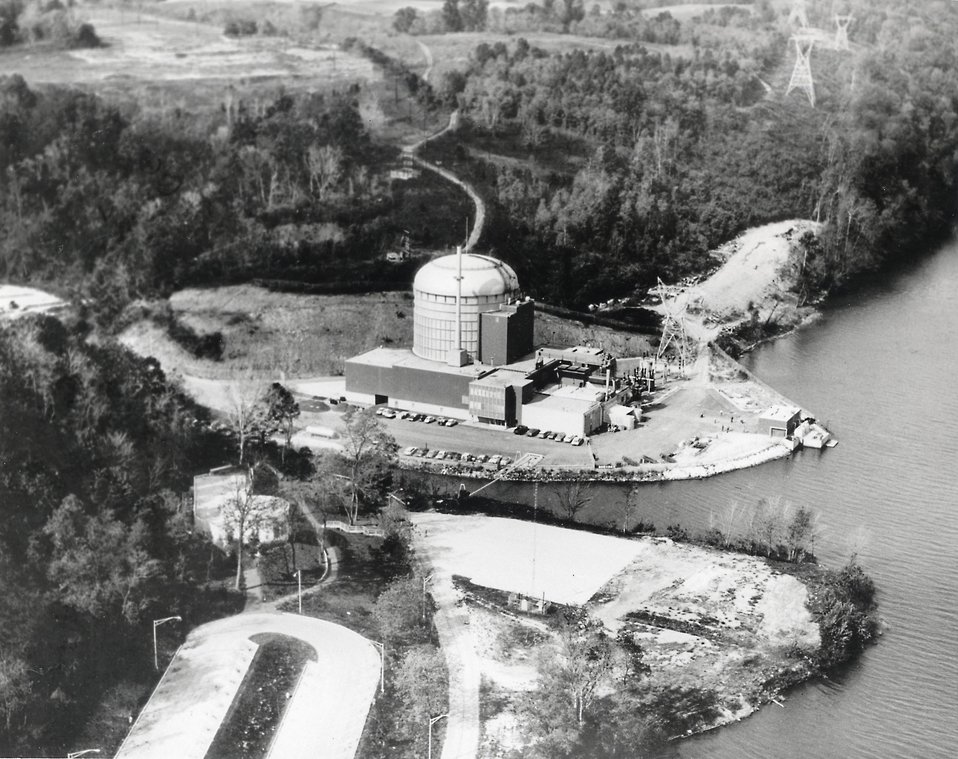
A high temperature gas-cooled reactor nuclear power plant built at Peach Bottom, Pennsylvania, as part of the AEC's power reactor demonstration program. Circa 1968.